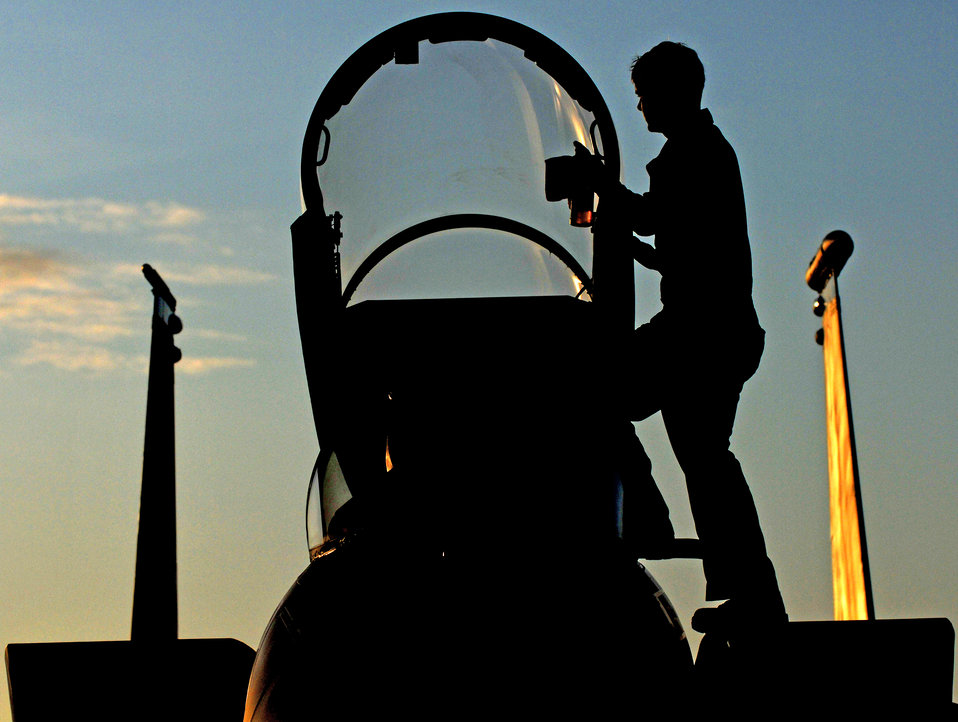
Joint Bilateral Training

Airman 1st Class Derek Wiltse cleans an F-15C Eagle canopy Feb. 23, 2010, at Kadena Air Base, Japan. Kadena Airmen were participating in joint bilateral training with other U.S. forces and the Japan Air Self Defense Force from Feb. 22 to 26. Airman Wiltse is assigned to the 44th Aircraft Maintenance Unit.